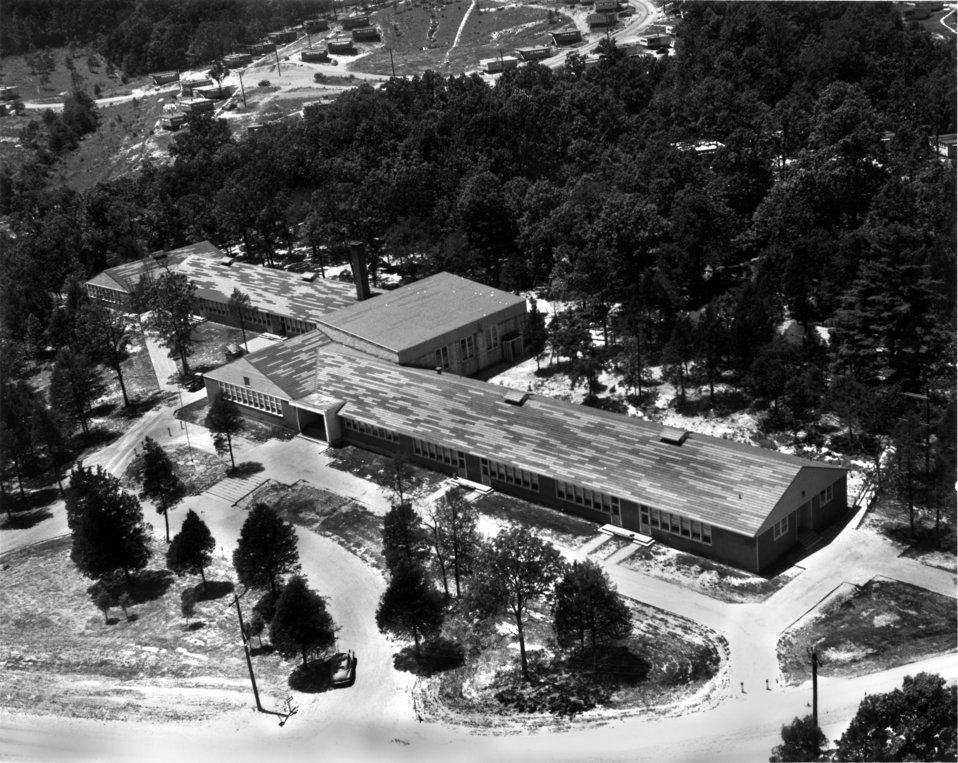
Glenwood Elementary School Oak Ridge 1945

1202 DOE photo Ed Westcott 1945 Oak Ridge Tennessee